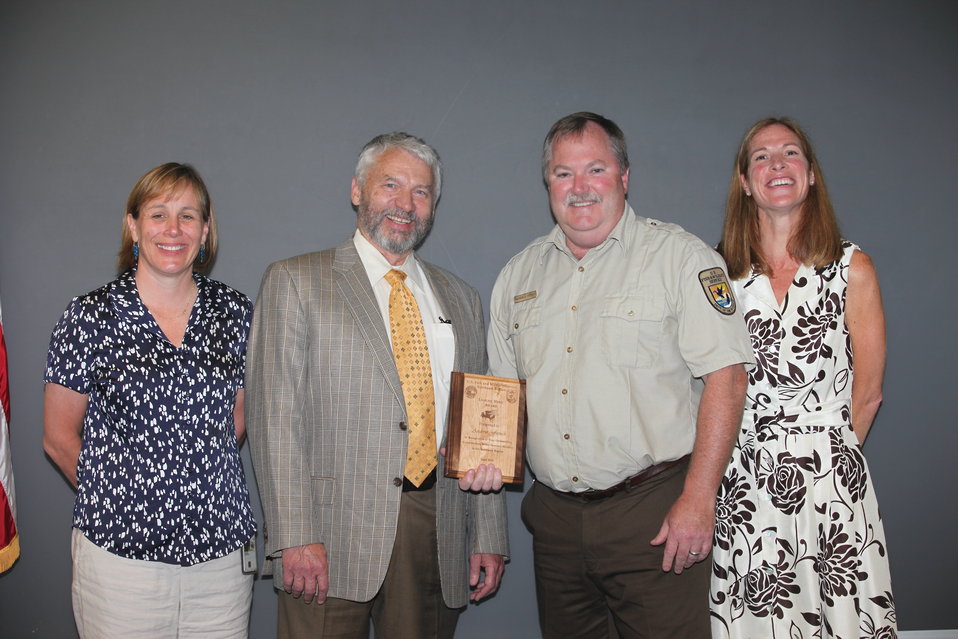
Andrew French, Refuge Manager Silvio O. Conte National Fish and Wildlife Refuge, was awarded a Region 5 Unsung Hero Award.
From left to right: Deputy Regional Director Deb Rocque, Deputy Director Rowan Gould, Darleen Cutting, and Regional Director Wendi Weber